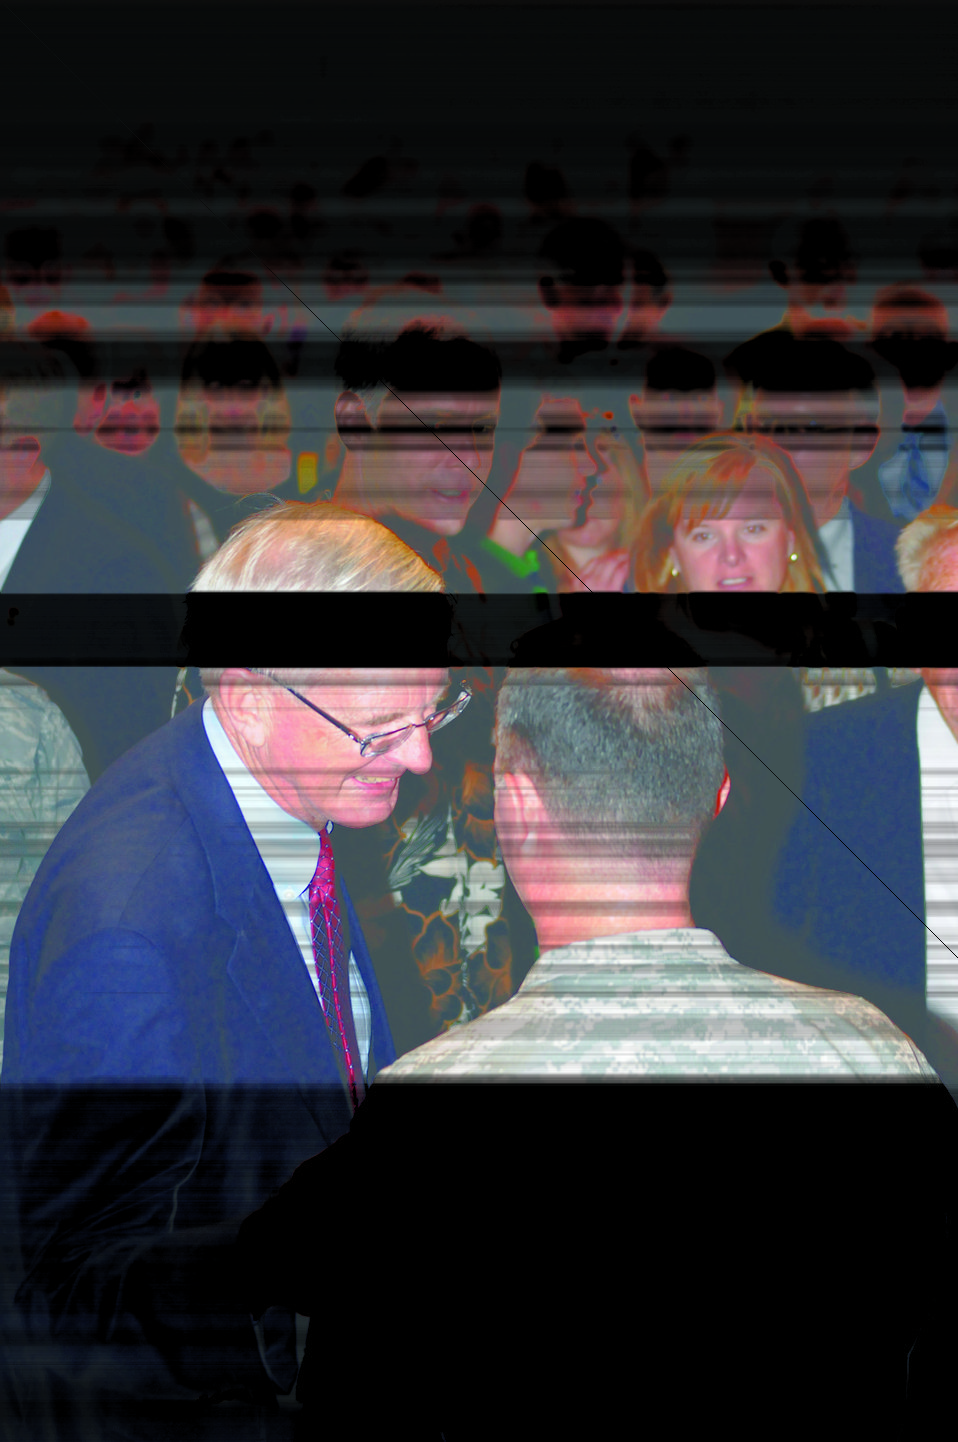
Bid farewell

Sacramento District retiree Lou Whitney speaks with Col. Thomas C. Chapman after the change of command ceremony. Attendees came forward following the ceremony to bid farewell to the Chapman family. The ceremony was held at the Sacramento Memorial Auditorium in Sacramento, Calif., July 27.